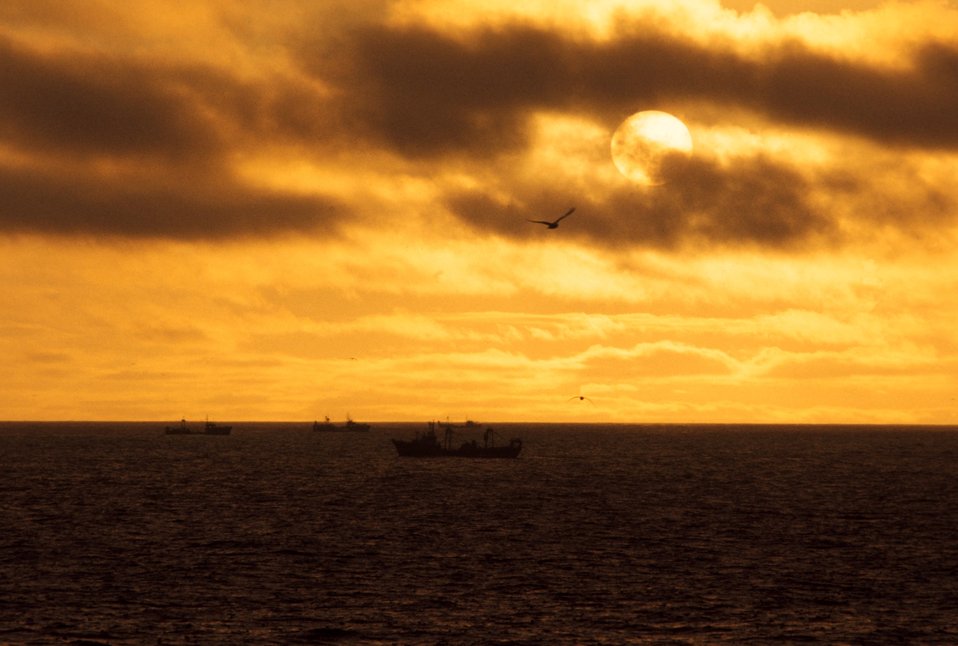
A sunset over Bering Sea crab fishing vessels.